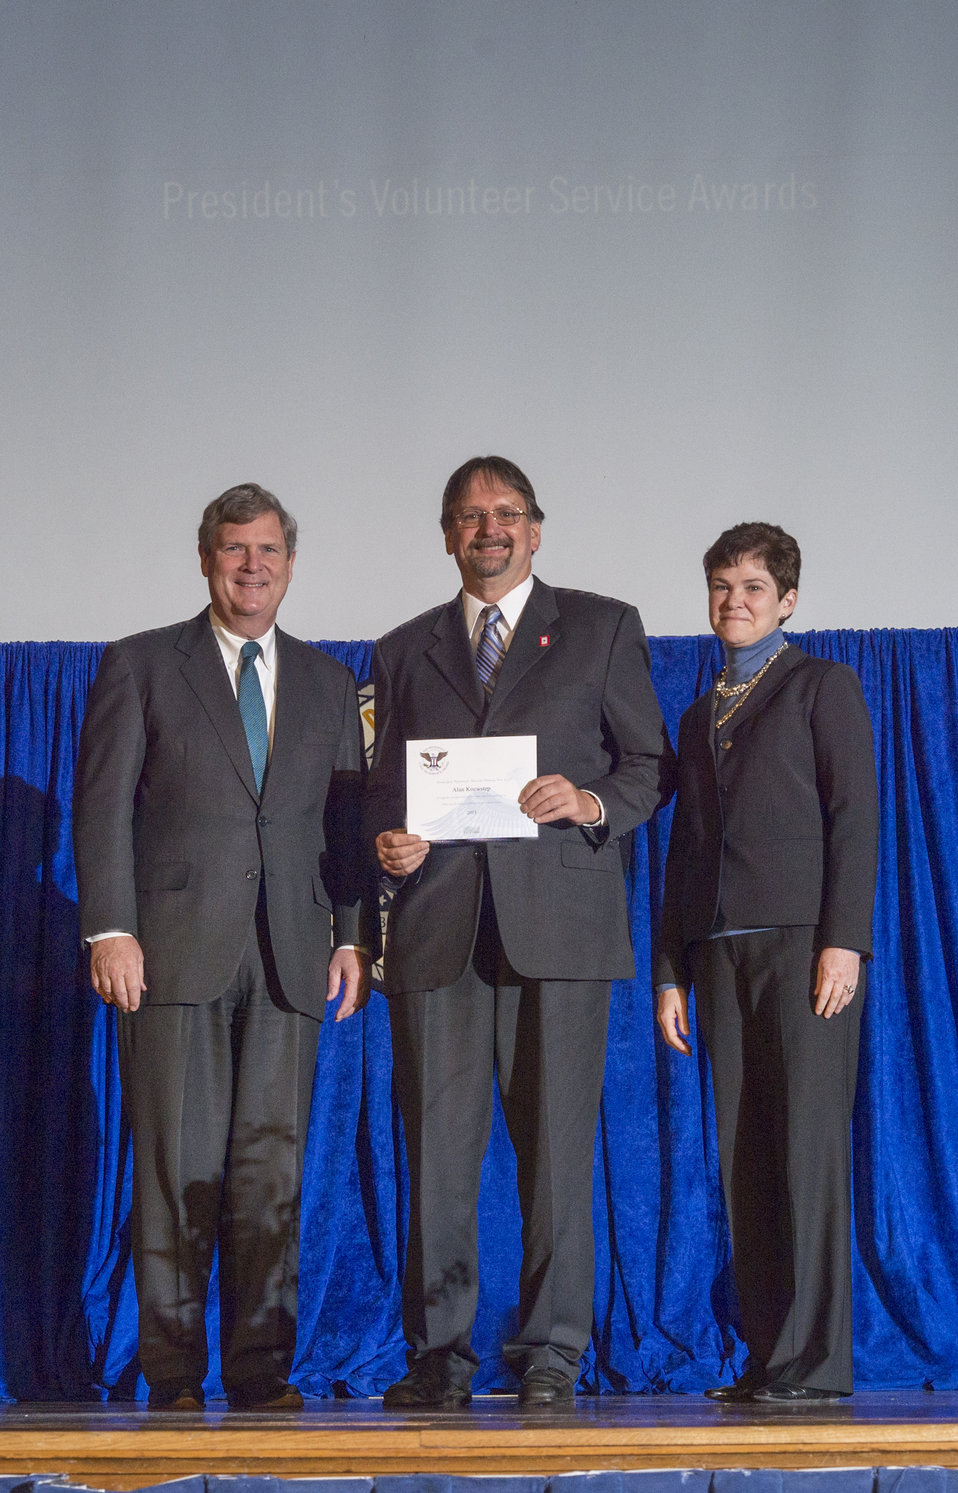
Agriculture Secretary Tom Vilsack and Agriculture Deputy Secretary Krysta Harden present the President’s Call to Service Award to Alan Knewstep at the 2013 Secretary's Honor Awards in the Jefferson Auditorium at the U.S. Department of Agriculture (USDA) in Washington, D.C. on Wednesday, Dec. 11, 2013. The President’s Call to Service Award is given to an employee who has served 4,000 hours or more of service with a qualifying organization over the employee’s lifetime.